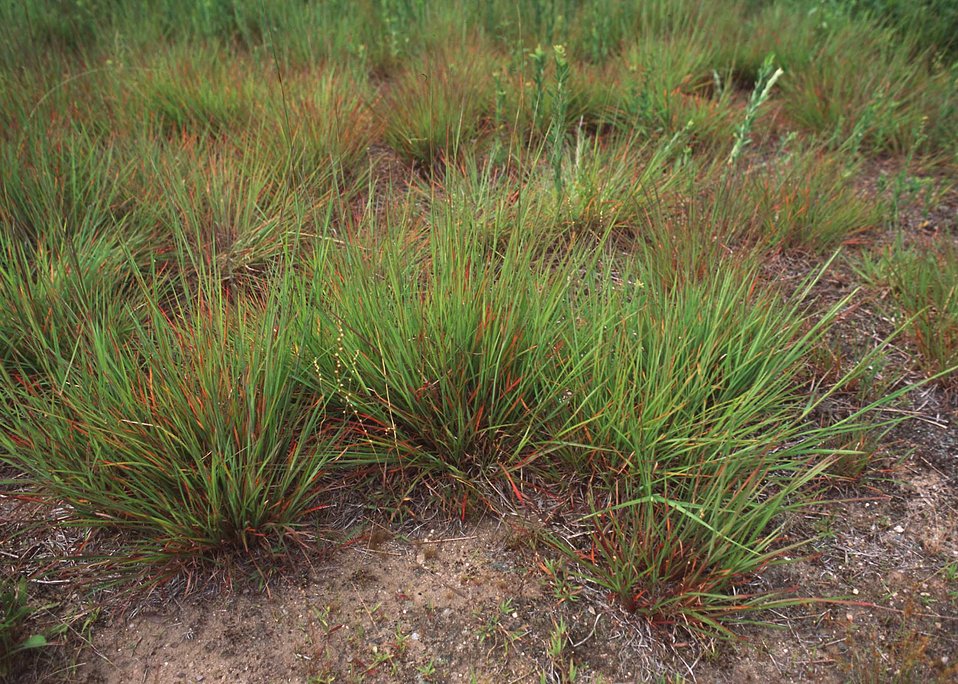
Little Bluestem within a warm season grassland habitat restoration project in New London County.